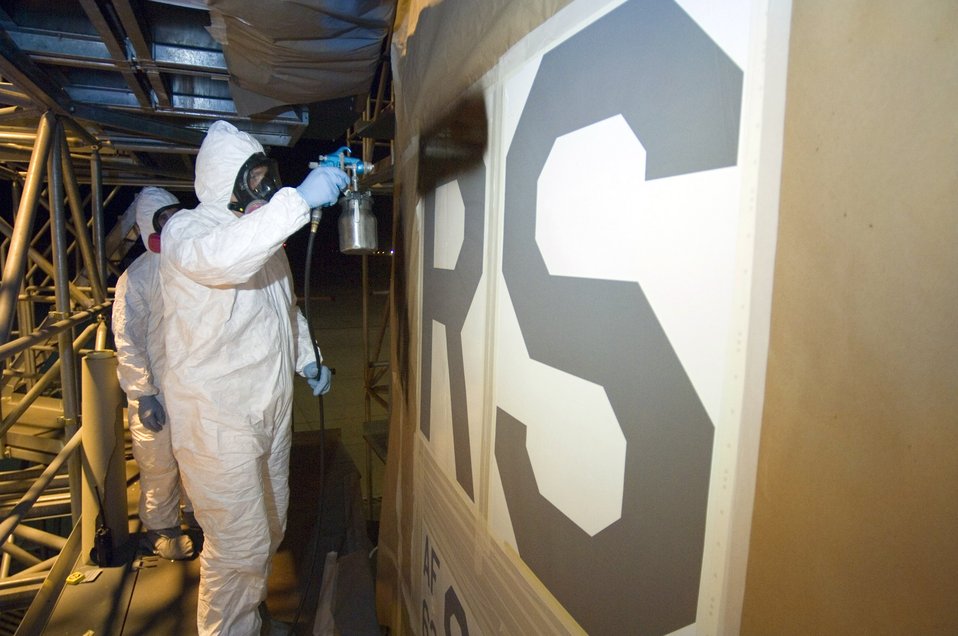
Telltale signs

Staff Sgt. John Zentner paints